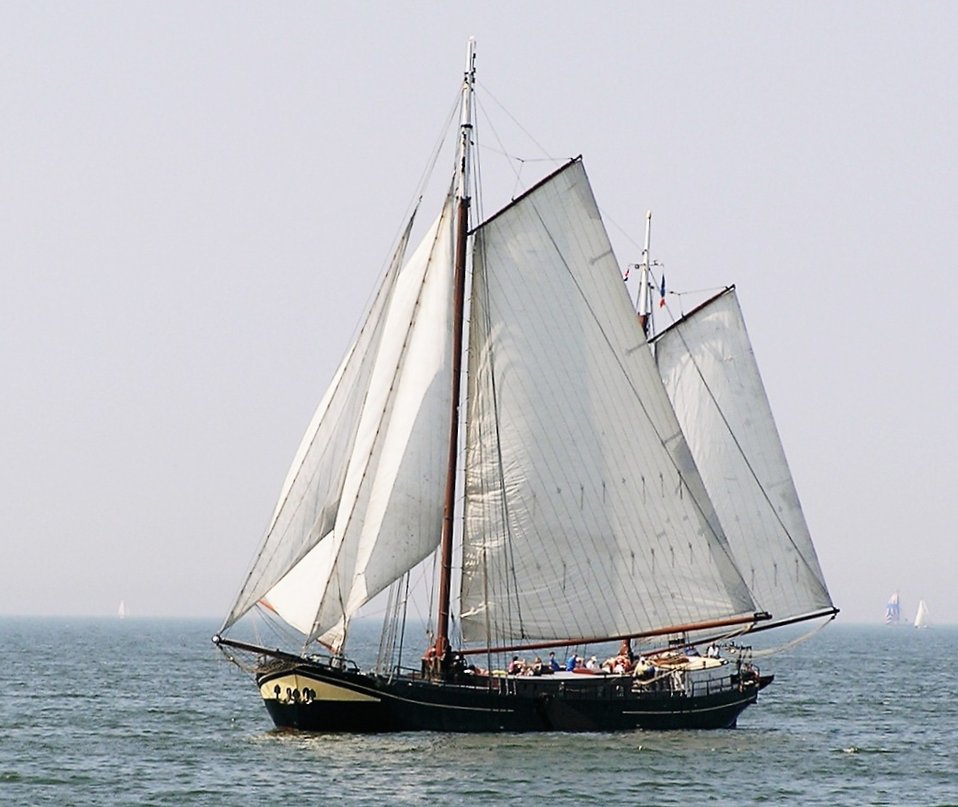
IJsselmeerTraditionalBoat